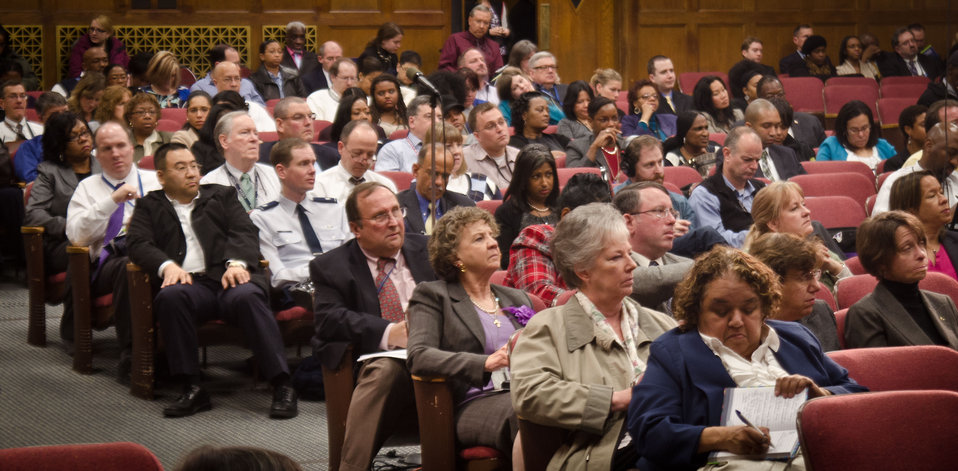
Attendees at the Work Force Recruitment Program’s (WRP) 'Your Key To Hiring Student Interns and Employees with Disabilities” event hosted by the United States Department of Agriculture (USDA) in the Jefferson Auditorium, Washington, D.C. on Tuesday, February 7, 2012.